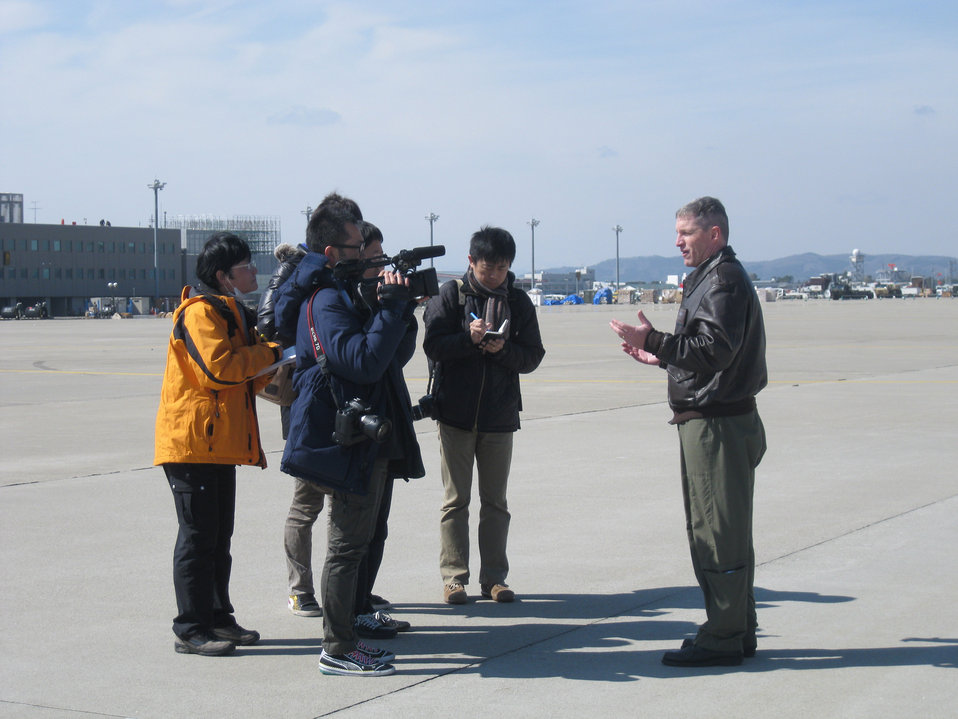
Yokota AB airlifters deliver fuel to power Sendai Airport

Japanese media representatives interview Maj. Rob Mitchell after a flight to Sendai Airport March 24, 2011. Airmen from the 36th Airlift Squadron delivered more than 2,300 gallons of diesel fuel aboard a C-130H Hercules at the request of the government of Japan. Major Mitchell is a pilot assigned to the 36th AS.